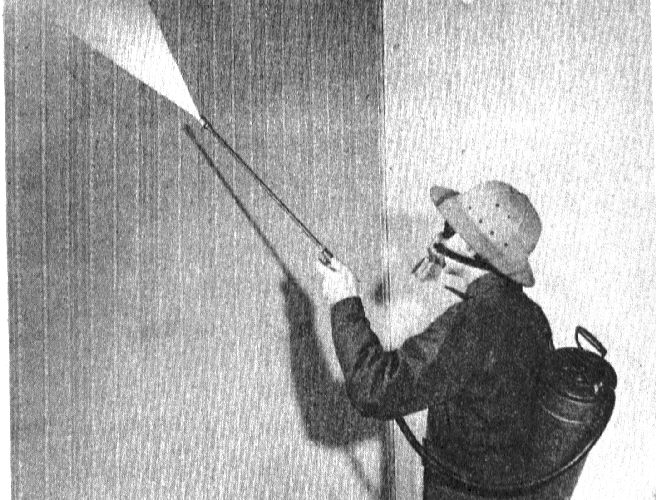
Historical glimpse of Malaria eradication in the United States.